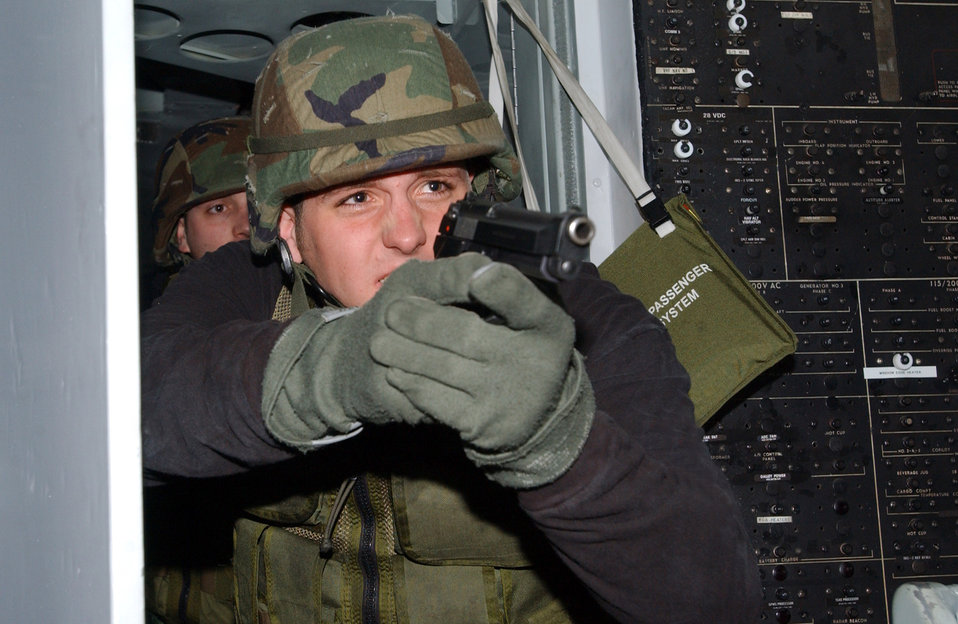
Point man

ROYAL AIR FORCE FAIRFORD, England -- Airman 1st Class Brian Bourbeau participates in the recapturing of a KC-135 Stratotanker as part of a stop alert exercise here April 14. Airman Bourbeau is a security forces Airman with the 100th Security Forces Squadron.